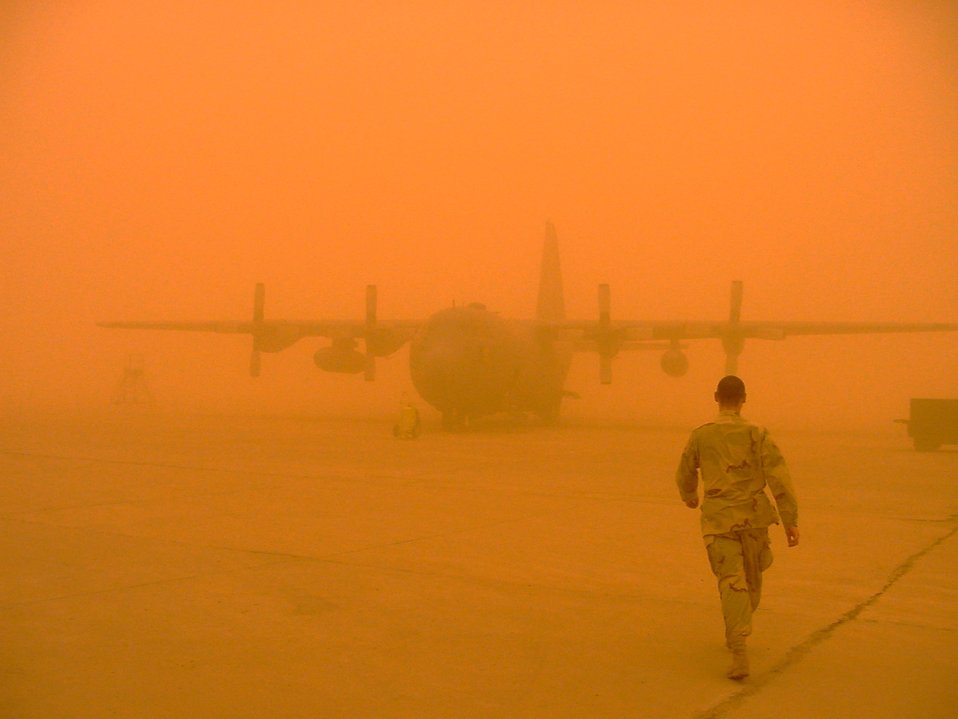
Sand storm

A maintainer walks to secure an Iraqi Air Force C-130E Hercules at New Al Muthana Air Base, Iraq, on Monday, May 8, 2006, during a sand storm. The storm engulfed the Baghdad area and caused near-zero visibility.